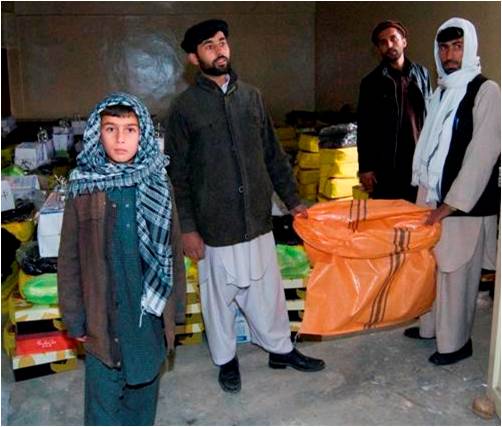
USAID Assists Victims of Terror in Kapisa

Shortly after an indiscriminate rocket attack killed 53 civilians in the Tagab district of Kapisa province, the U.S. Government stepped in to help survivors. USAID partnered with the District Government and the Kapisa Provincial Reconstruction Team (PRT) to offer condolences to the victims' families and provide them with much-needed humanitarian assistance to sustain them through the winter season.
Food, warm clothing, and heaters were among the items USAID and the Kapisa PRT provided to the district government for distribution to the victims’ families at a shura (community gathering). The shura offered the community a chance to mourn the dead, and permitted top provincial officials and religious leaders to express their solidarity with the community. The newly elected head of the provincial council offered prayers for the victims and joined the local mayor and district governor in thanking USAID and PRT representatives for their assistance.
USAID provided the winterization kits for distribution by the district government through a $10,000 community stabilization grant under the Local Governance and Community Development program (LGCD), USAID’s prime counterinsurgency effort in Afghanistan. The Kapisa PRT supplemented the grant with $5,000 from the Commander's Emergency Response Program (CERP).
By working together to support such quick-impact interventions, USAID and its counterparts provide inputs for resource-strapped district and provincial governments, enabling them to respond quickly to their constituents’ immediate needs.
As USAID’s flagship stabilization effort, the LGCD program works to engage communities in unstable areas to take an active role in their own security. It also addresses priority grievances of at-risk populations through integrated community development projects. Moreover, the project helps to enhance the legitimacy of the local government by enabling government staff to provide support to communities as a means of building trust between the government and its constituents.